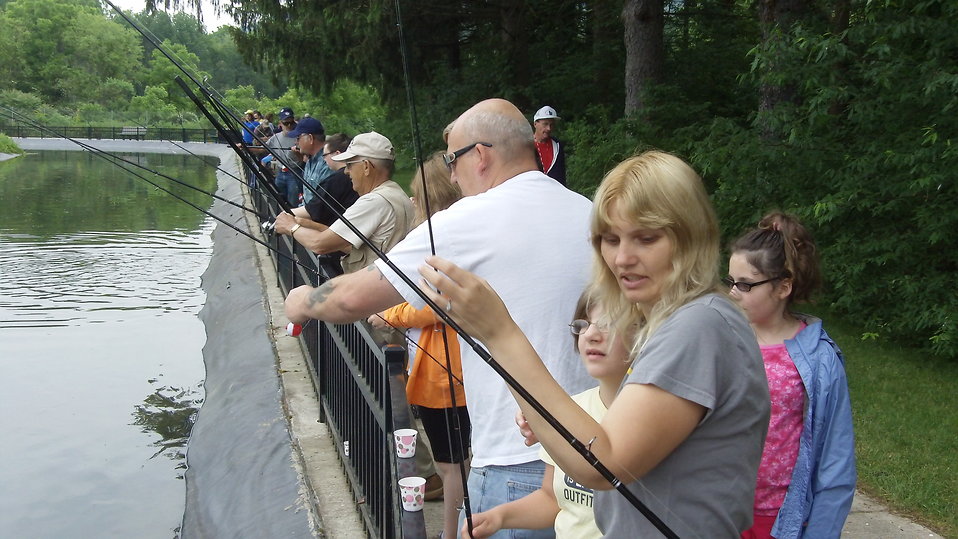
Northeast Fishery Center's Annual Fishing Event

Families fishing at the Northeast Fishery Center's annual fishing event in Lamar, PA.